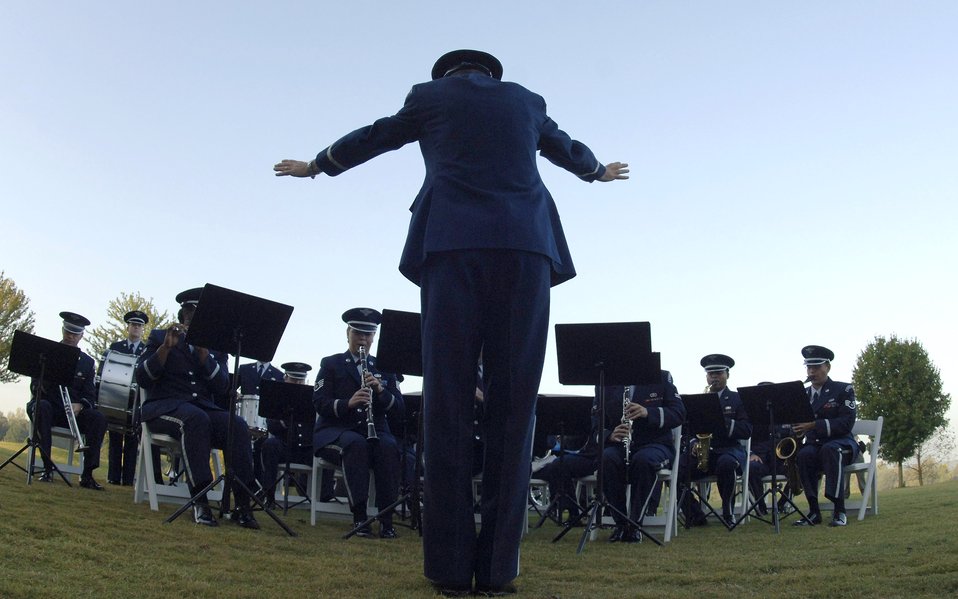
Strike up the band

The Band of the U.S. Air Force Reserve plays the national anthem during a ceremony held in Marietta, Ga., kicking off Air Force Week Atlanta. Air Force Weeks increase the awareness and support of the public by showcasing the Air Force's diverse capabilities and missions and the accomplishments and sacrifices of its Airmen.